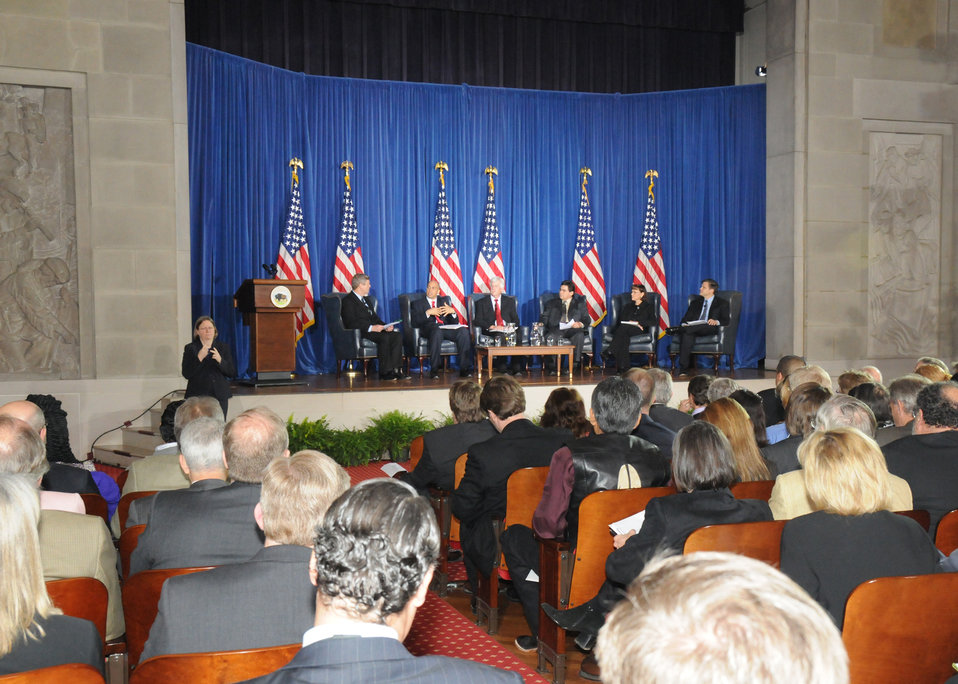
Agriculture Secretary Tom Vilsack hosts a panel discussion about “Conserving working lands for the benefit of all Americans” at the Department of Interior in Washington, D.C., on Friday, April 16, 2010. Members of the panel (L to R) Mayor of Newark, NJ Cory Booker, Indiana farmer and conservationist Ray McCormick, Vice President of the Archibald Bush Foundation and Nations Team Leader Jamie Pinkham, Western Policy Manager at the Land Trust Alliance, Lynne Sherrod, and author and historian Douglas Brinkley. USDA photo 10di1316-33